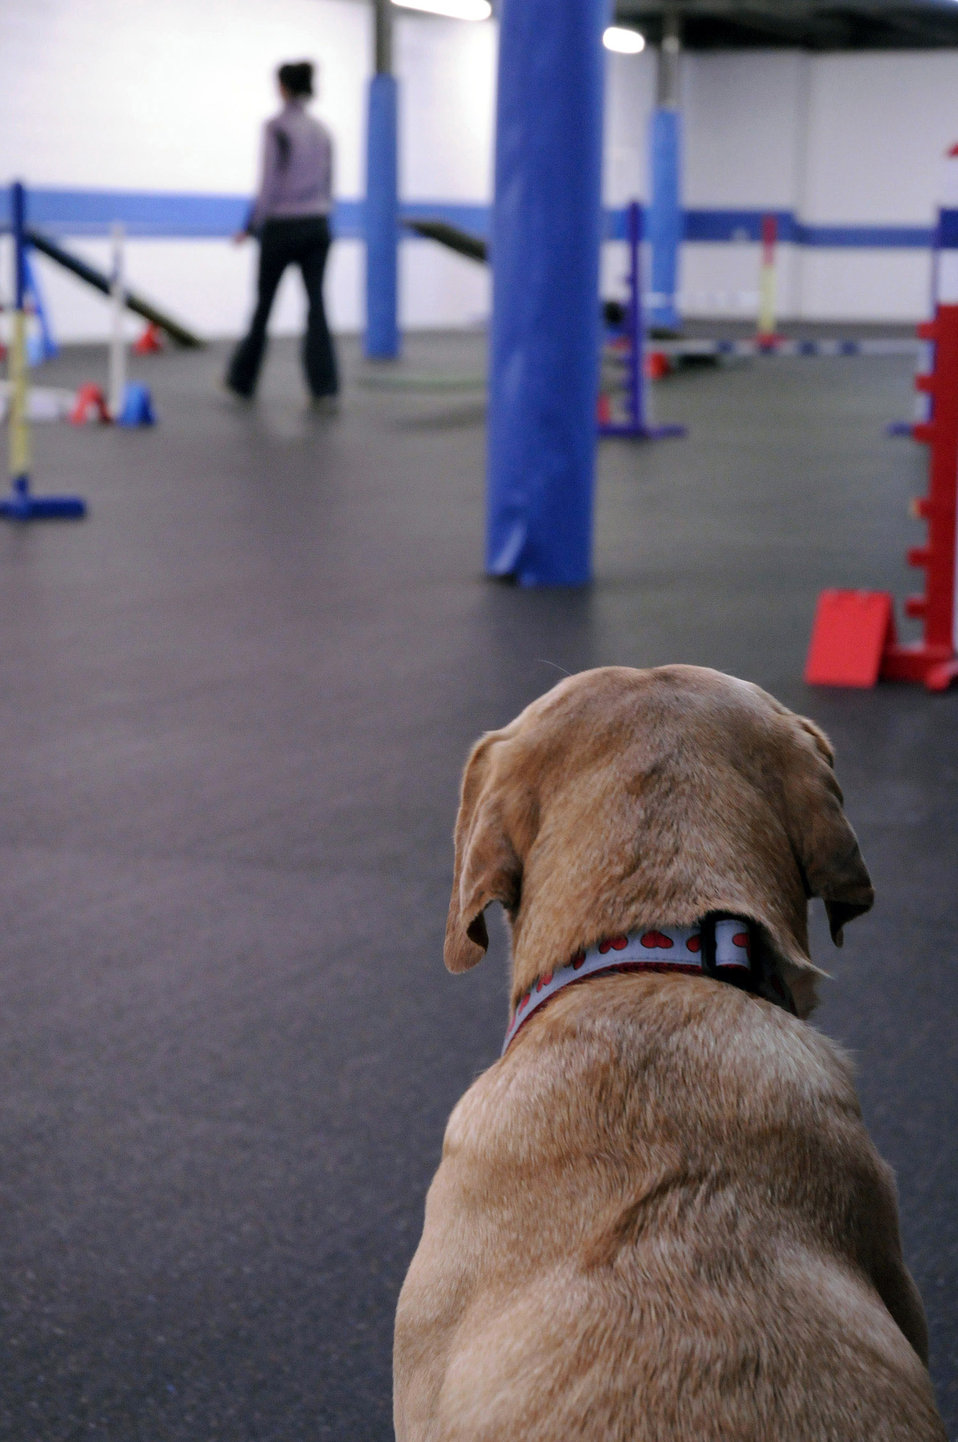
Rags to Riches in the American Heartland

First Lt. Heather Greatting checks out an obstacle course during agility training Feb. 11 with Zoey, a 9-year-old Labrador retriever she obtained from a Labrador rescue center. The lieutenant is a space intelligence surveillance and reconnaissance systems employment analyst with the National Air and Space Intelligence Center at Wright-Patterson Air Force Base, Ohio.